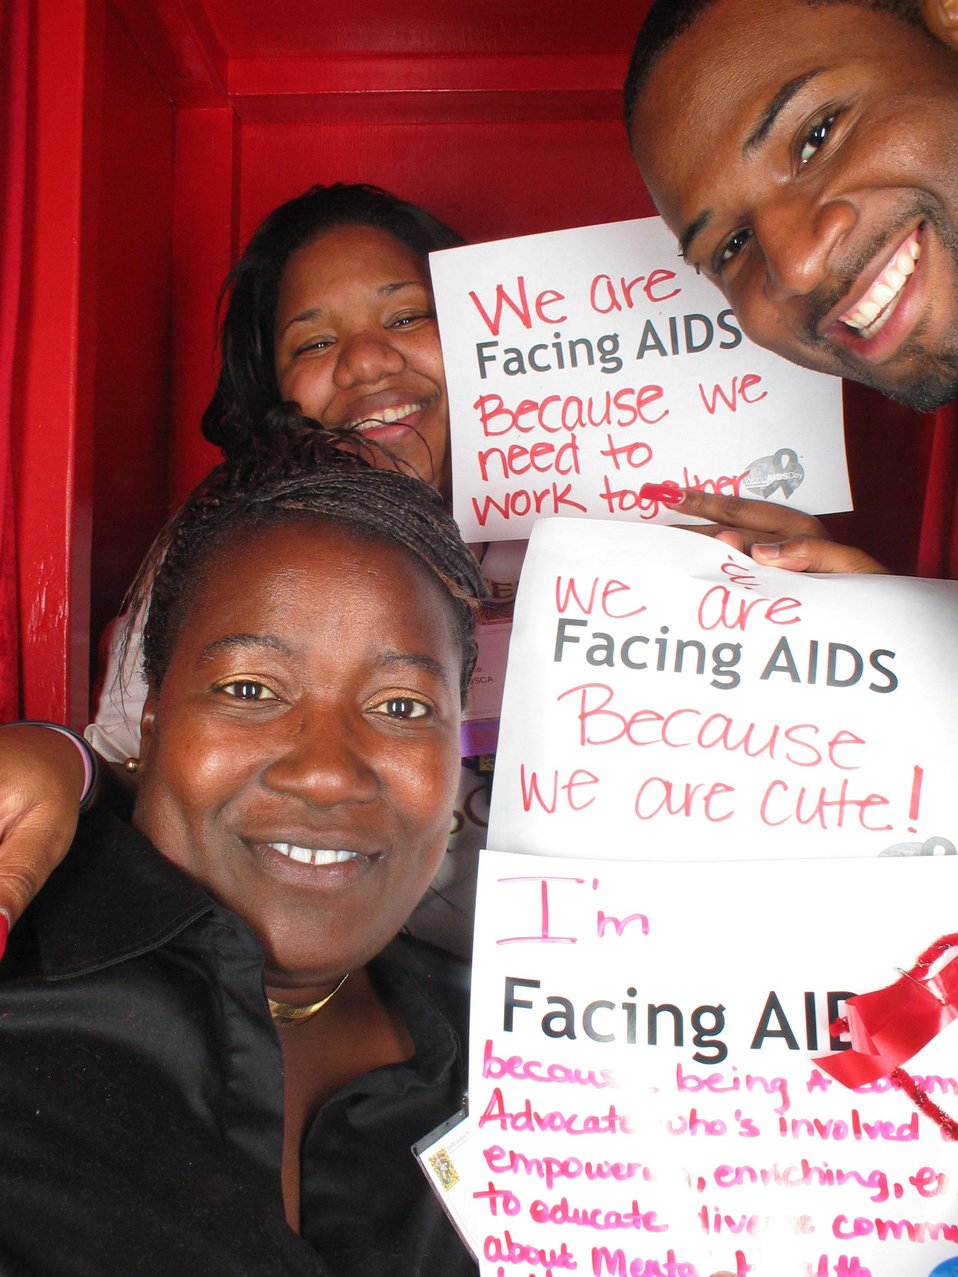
We are Facing AIDS because we need to work together. We are Facing AIDS because we are cute!